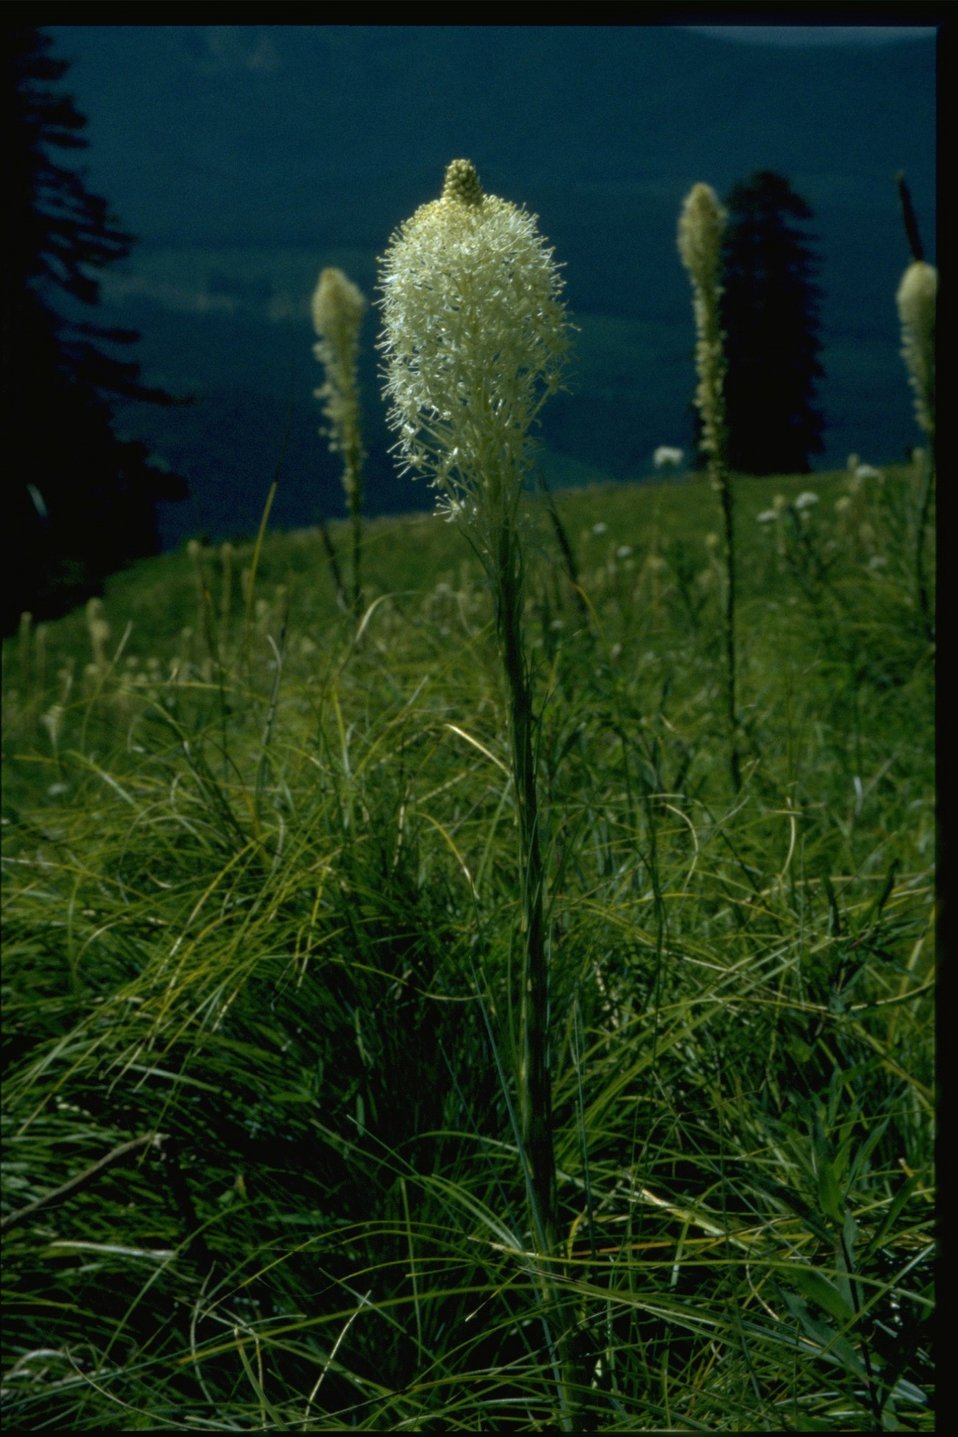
Medium shot of Xenophyllum tenax.